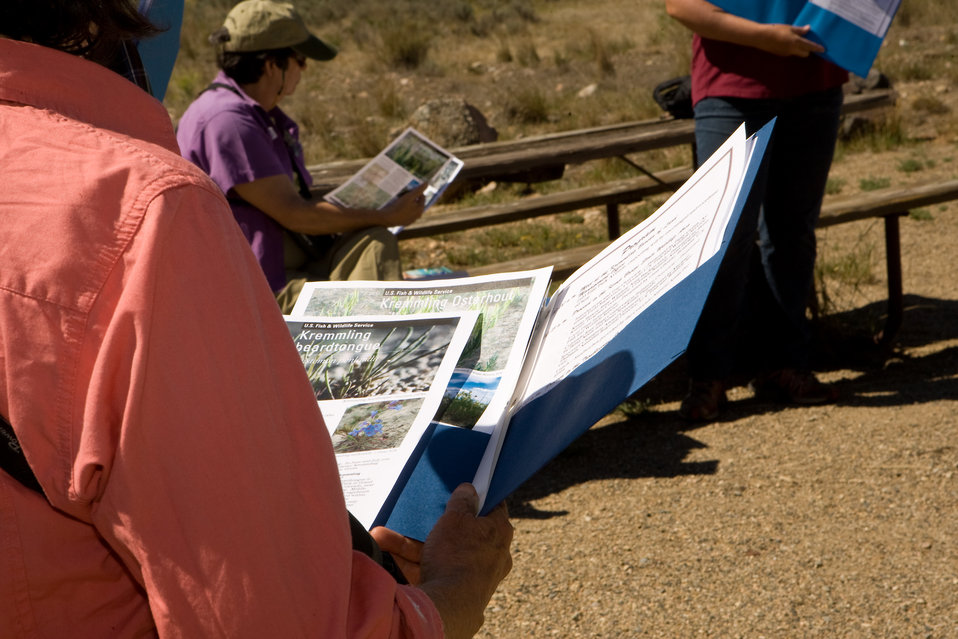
Colorado Rare Plant Conservation Initiative

The Colorado Rare Plant Conservation Initiative (RPCI) is a partnership of 23 statewide and regional agencies, private organizations, and academic institutions working to conserve 121 rare plants in Colorado. As part of these efforts the group developed the Colorado Rare Plant Conservation Strategy, developed Best Management Practices to reduce energy development impacts, addressed climate change, and developed focused strategies for the conservation of individual species at eight priority landscapes. The group has also worked to coordinate volunteer efforts for plant conservation across the state.